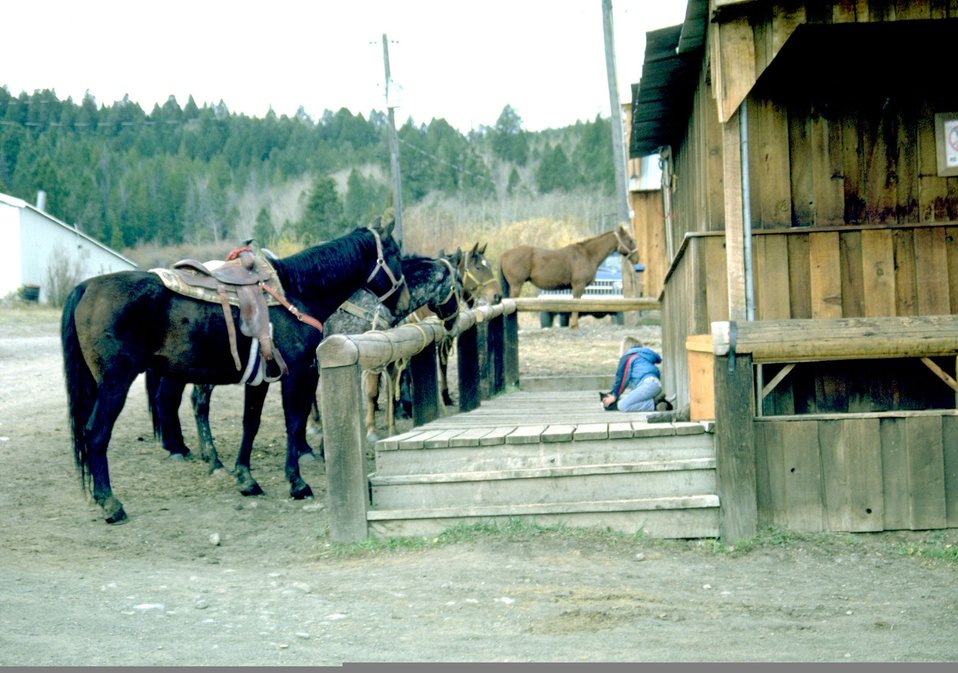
Horses at hitching rail